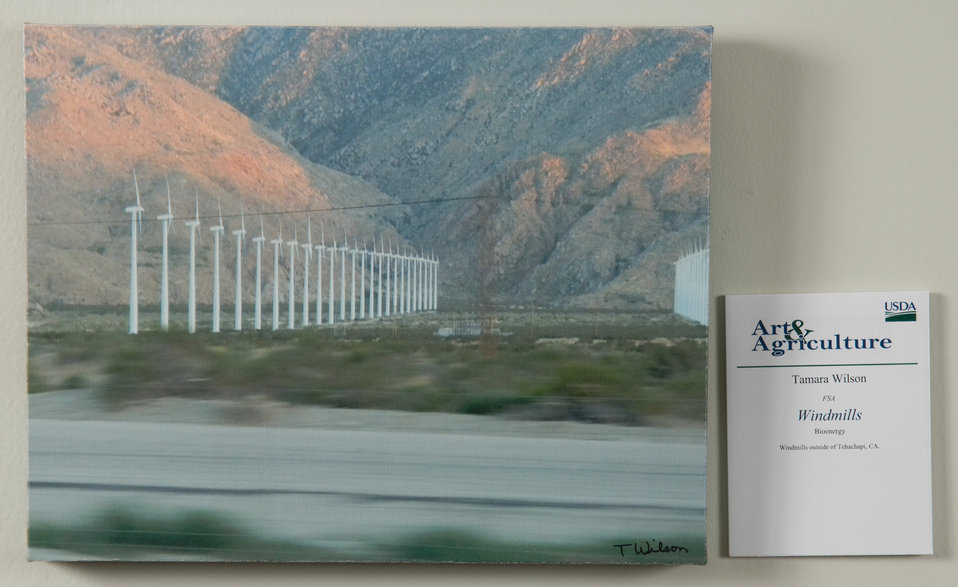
Online Viewer's Choice entries of the 2013 Art & Agriculture, Tuesday, July 9, 2013, in the South Building, Washington, D.C. Themes were expressed by employees from across the department and the contest was open to full-time and part-time USDA employees. Winning artwork will be displayed till the end of the year. U.S. Artistic expression is a creative outlet that is vital for an individual to grow and develop.